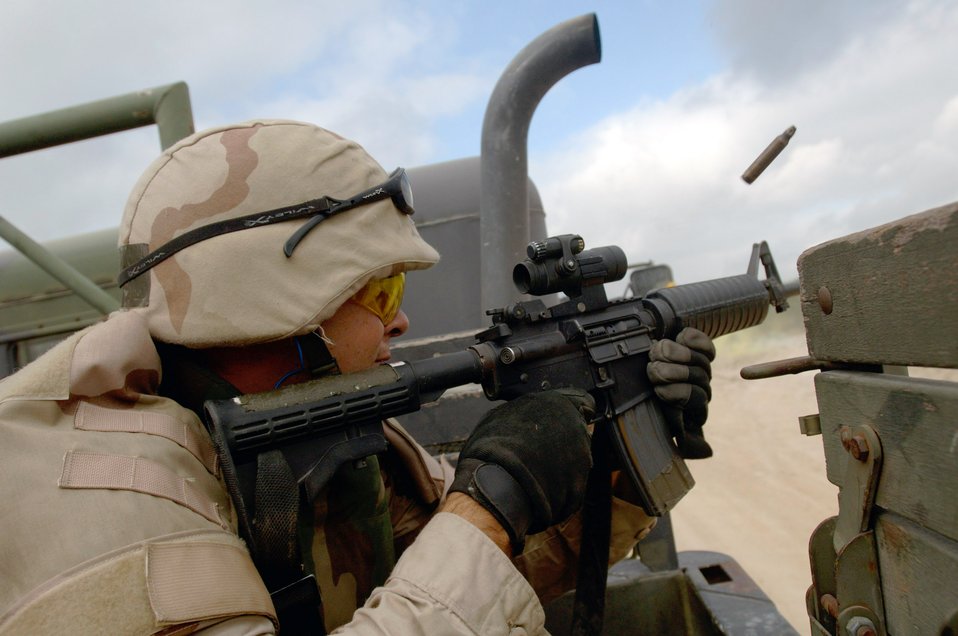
Convoy course training

SAN ANTONIO -- Staff Sgt. Brian Hanson scans and shoots out the right side of a 2 1/2-ton truck during a basic combat convoy course on-road training scenario. The course is designed to train transportation Airmen in basic combat skills required to integrate with joint forces in hostile convoy operations. The mentally and physically challenging course is conducted at nearby Camp Bullis and is run by the 37th Training Wing at Lackland Air Force Base. Sergeant Hanson is assigned to the 16th Logistics Readiness Squadron at Hurlburt Field, Fla.